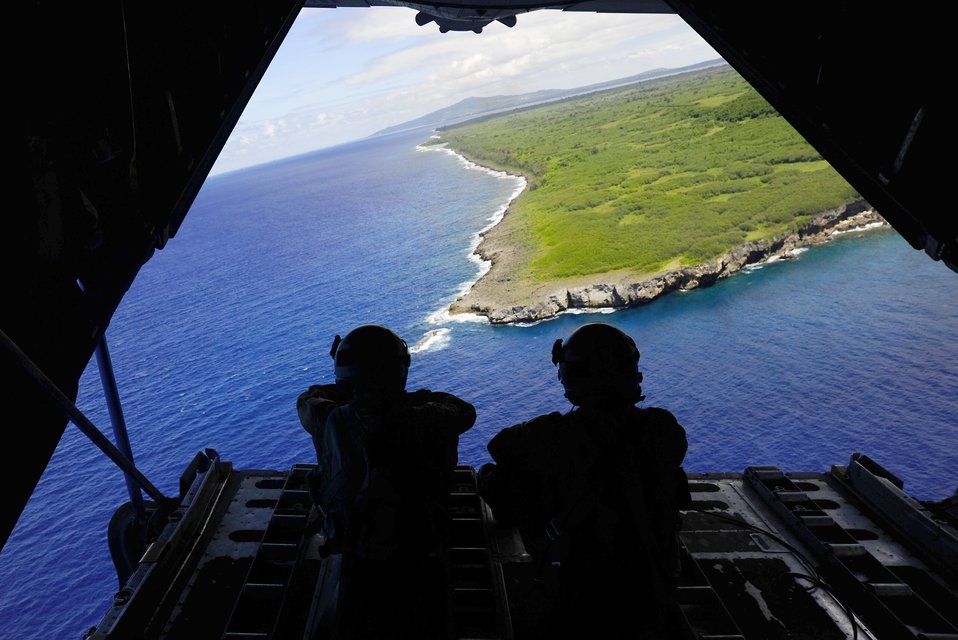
Cope North

Staff Sgt. Keo Khamonel and Staff Sgt. Stewart Guethlein admire the view from the back of a C-130 Hercules Feb. 23, 2011, over Tumon Bay, near Guam, during exercise Cope North. Sergeants Guthlein and Khamonel are loadmasters from the 36th Airlift Squadron at Yokota Air Base, Japan.